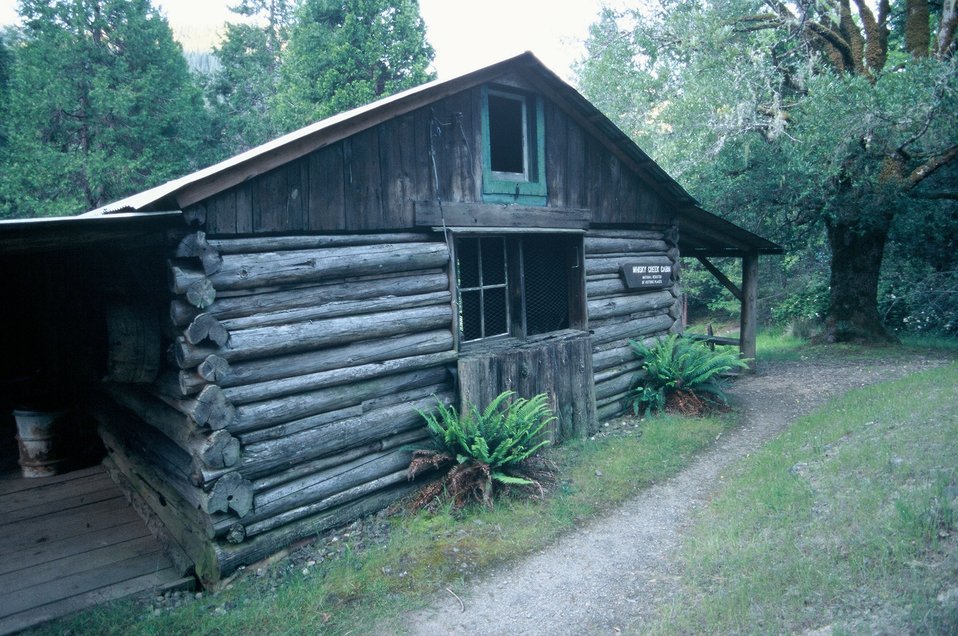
Whisky Creek Cabin along the Wild section of the Rogue River from Grave Creek to Foster Bar. 3100 cfs at Grants Pass and 5300 at Agness.